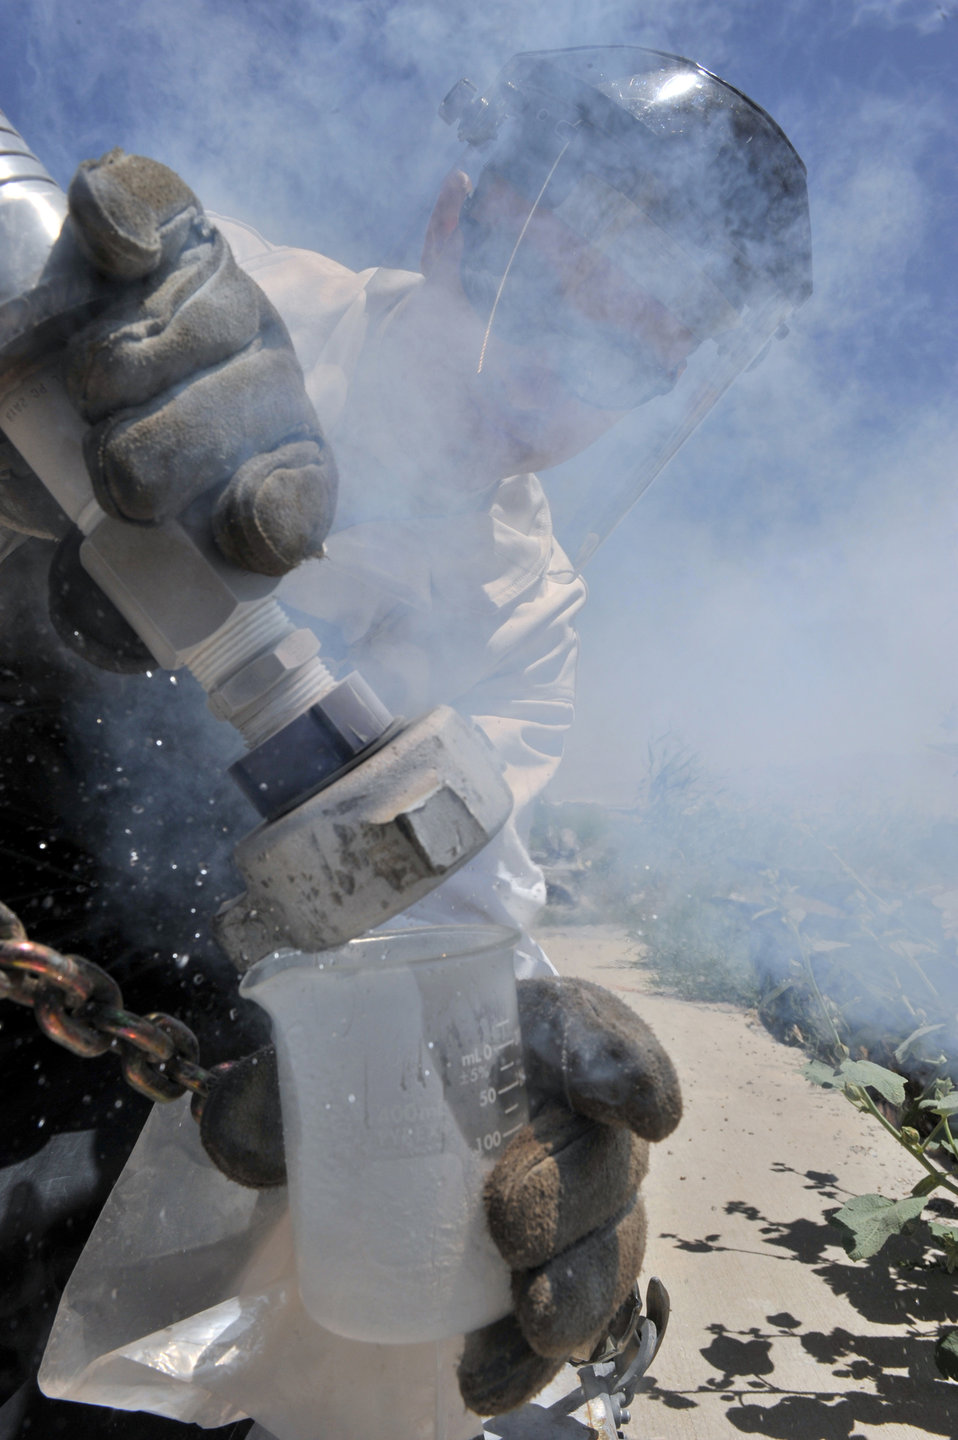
Sampling the elements

Staff Sgt. William Veal samples liquid nitrogen May 20, 2011, at Bagram Airfield, Afghanistan. Sergeant Veal is a cryogenic technician assigned to the 455th Expeditionary Logistics Readiness Squadron.